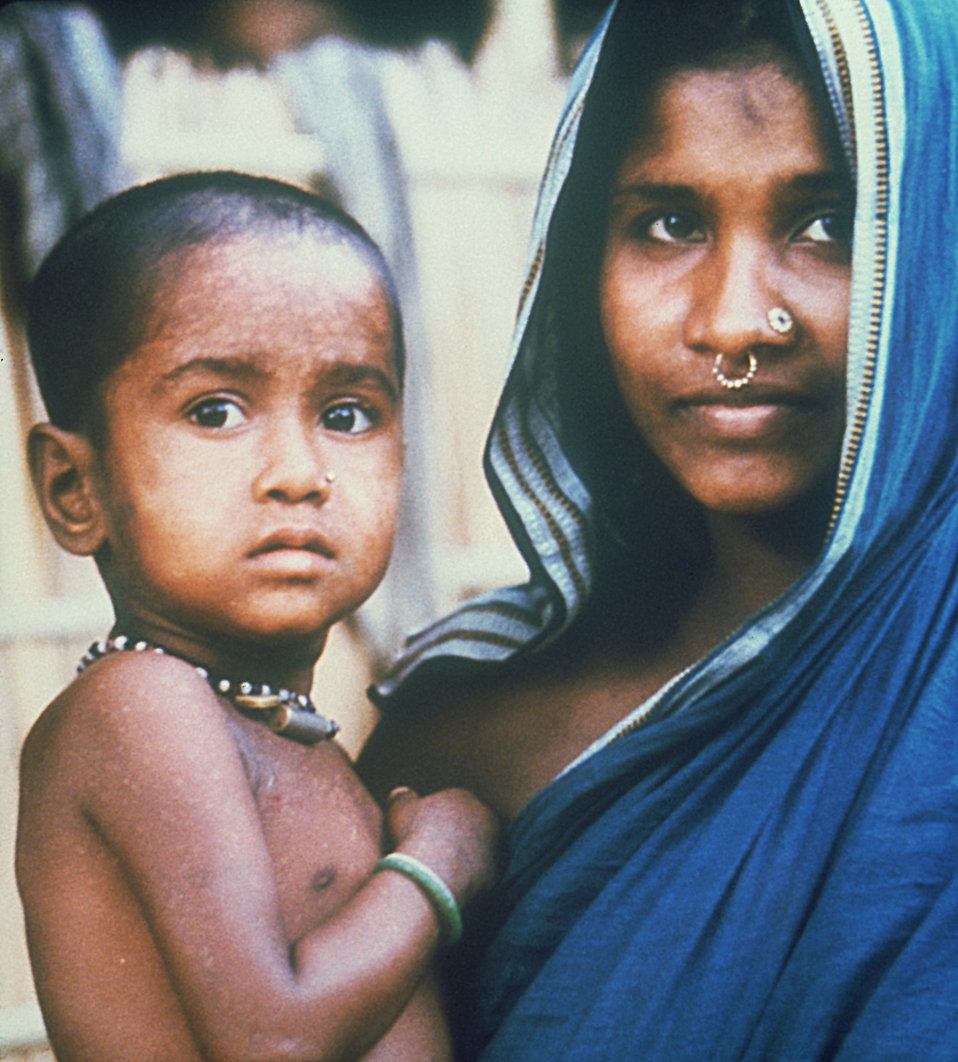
Shown here in her mother's arms, 3 year old Rahima Banu was the world's last recorded case of the most virulent form of smallpox, Variola major This image was captured in the village of Kuralia, on Bhola Island, in the Barisal District of Bangladesh, on October 16th, 1975.